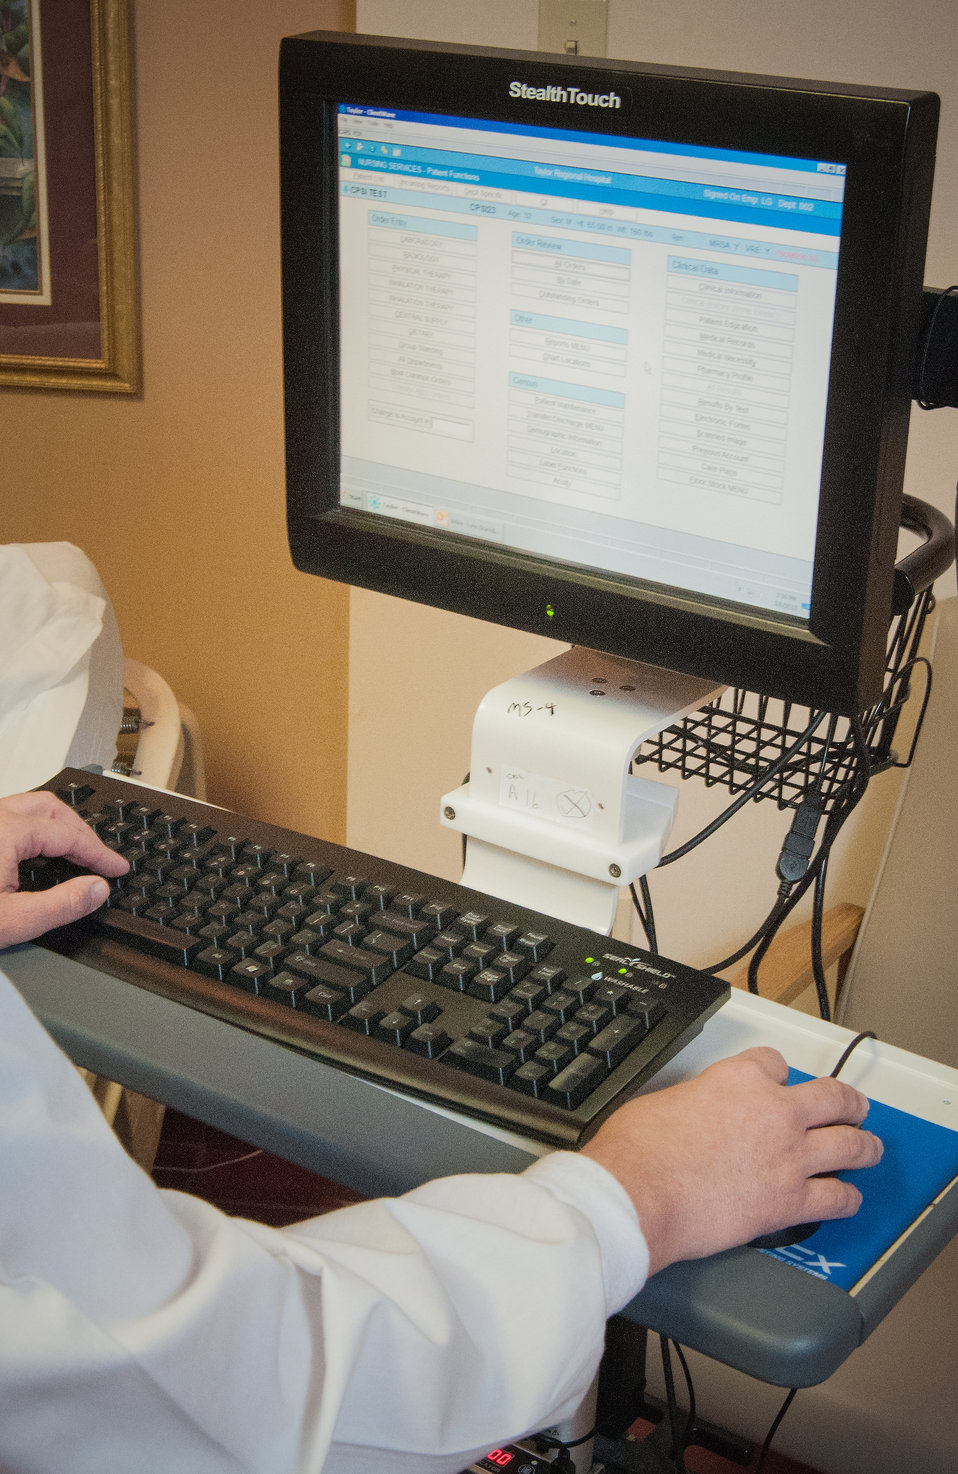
R.J. Taylor Memorial Hospital, Inc. Licensed Practical Nurse Dora Cater, LPN discusses a patients’ diagnosis and symptoms and records the information in the hospitals’ Electronic Medical Records System in Hawkinsville, GA on Mar. 6, 2013. The hospital is a licensed private, not-for-profit acute care facility providing emergency, specialty and primary health care in an area of rural Georgia that has a high percentage of people living below the state average poverty level and considered most economically distressed. The hospital has purchased an Electronic Medical Records System under an incentive program by the Federal government through the U.S. Department of Agriculture (USDA) Rural Development (RD) Community Facilities Loan (CF) that ensures fiscally responsive access to superior quality integrated health care.